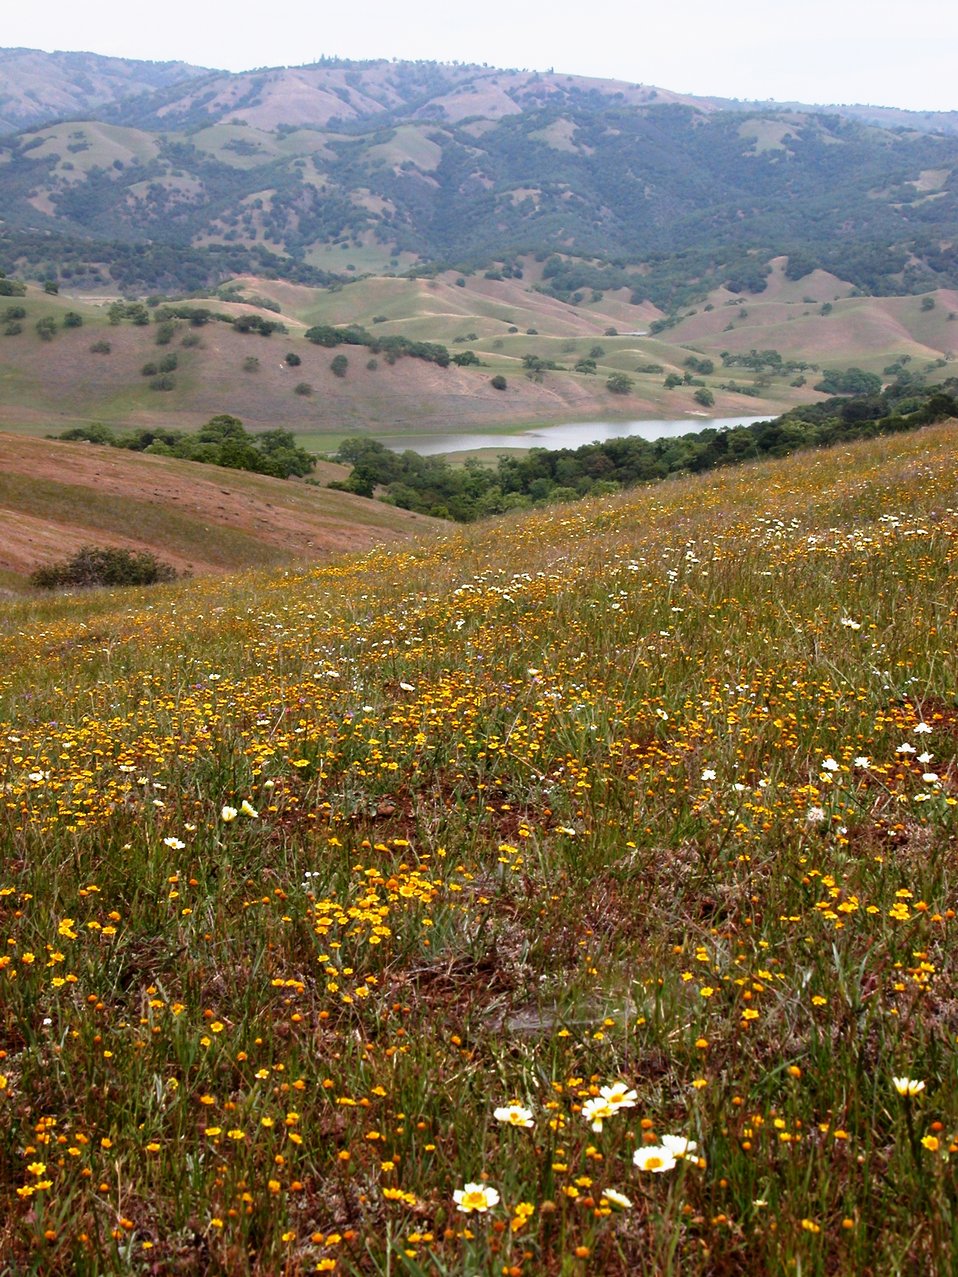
Coyote Valley with Anderson Lake in the Background

Photo Credit: Mike Thomas/USFWS

Species protected by the Santa Clara Valley Habitat Conservation Plan